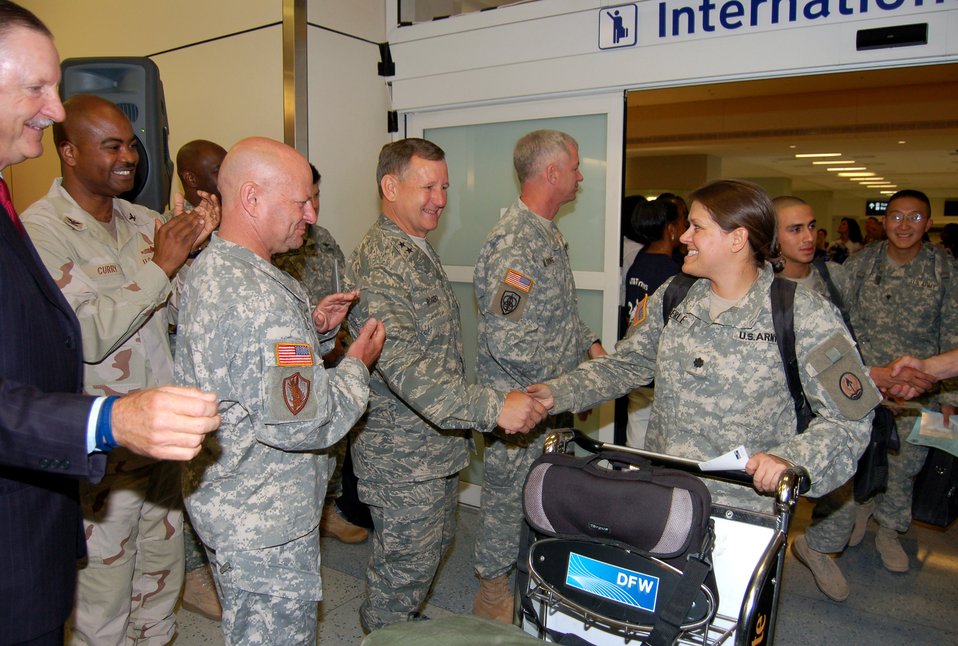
Air Mobility Command reaches milestone in 'R and R' flight ops

Maj. Gen. Frederick Roggero shakes hands with a Soldier returning from overseas on rest and recuperation leave June 12 at Dallas-Fort Worth International Airport. The general is the director of Air, Space and Information Operations at Headquarters Air Mobility Command.